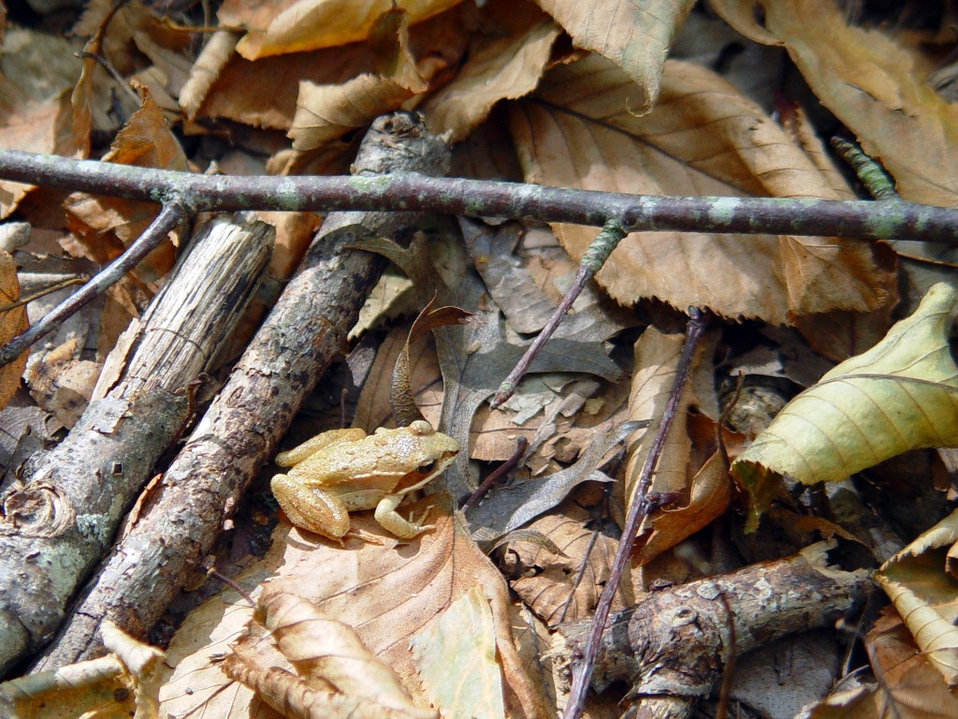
Photo of the Week - Wood Frog (CT)

Photo of the Week - 10/24/11

Wood frog at Bell Cedar Swamp (CT).